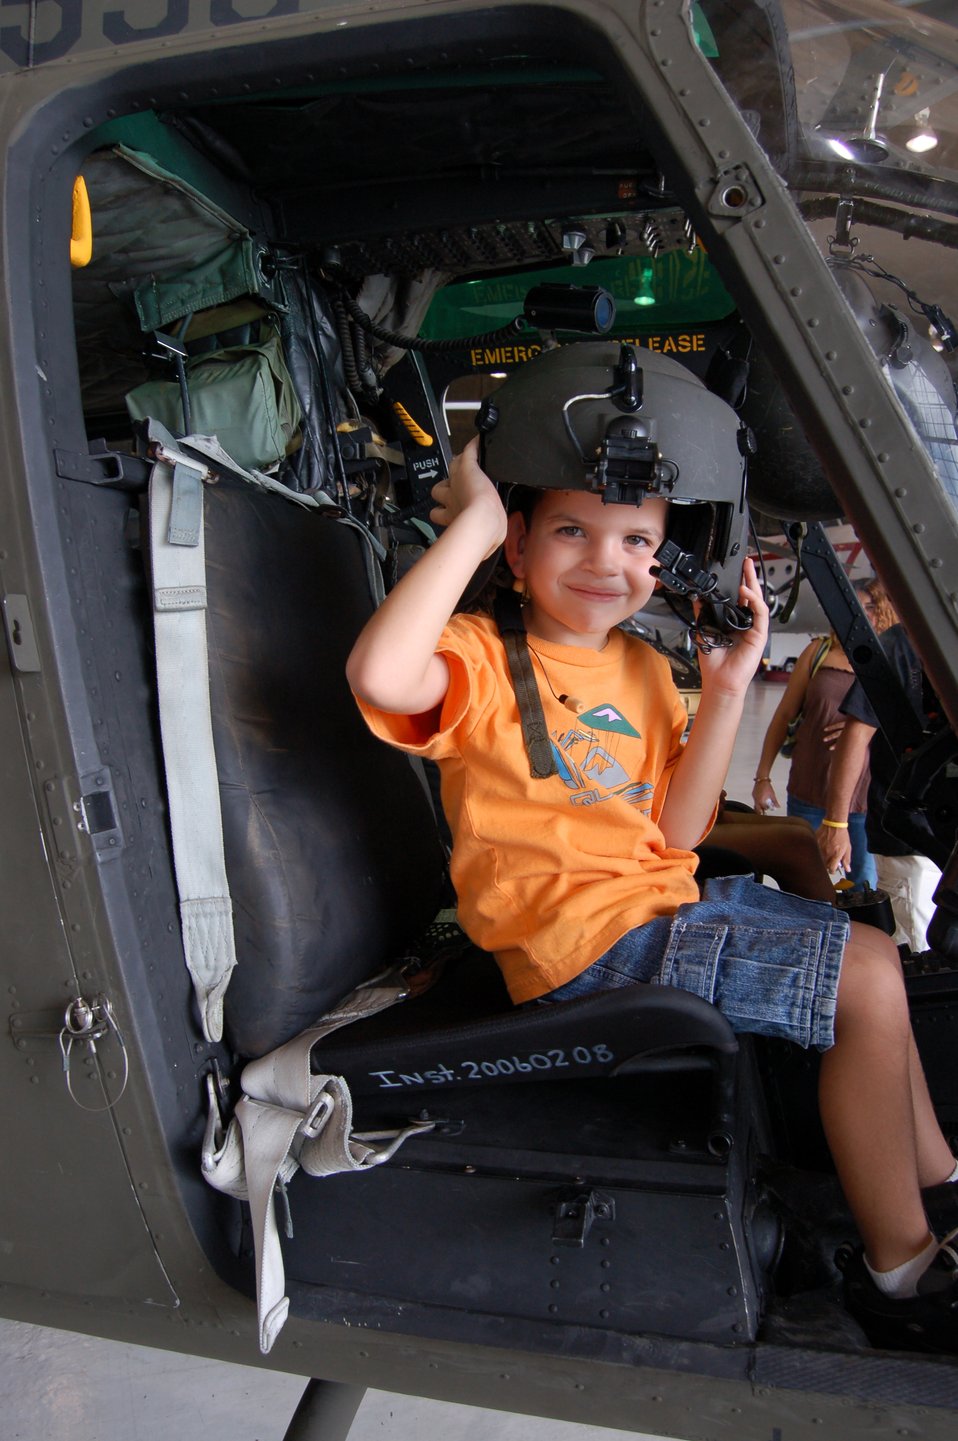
Visit

A child tries on a helmet in a Customs and Border Patrol OH-58 helicopter during a March 22 open house at Coast Guard Air Station Borinquen, Puerto Rico. Coast Guard Air Station Borinquen is located at what used to be Ramey Air Force Base, which closed in 1973. Approximately 500 visitors got a firsthand look at today's military members and equipment in Puerto Rico, and to see an historic C-54 cargo plane used during the Berlin Airlift.